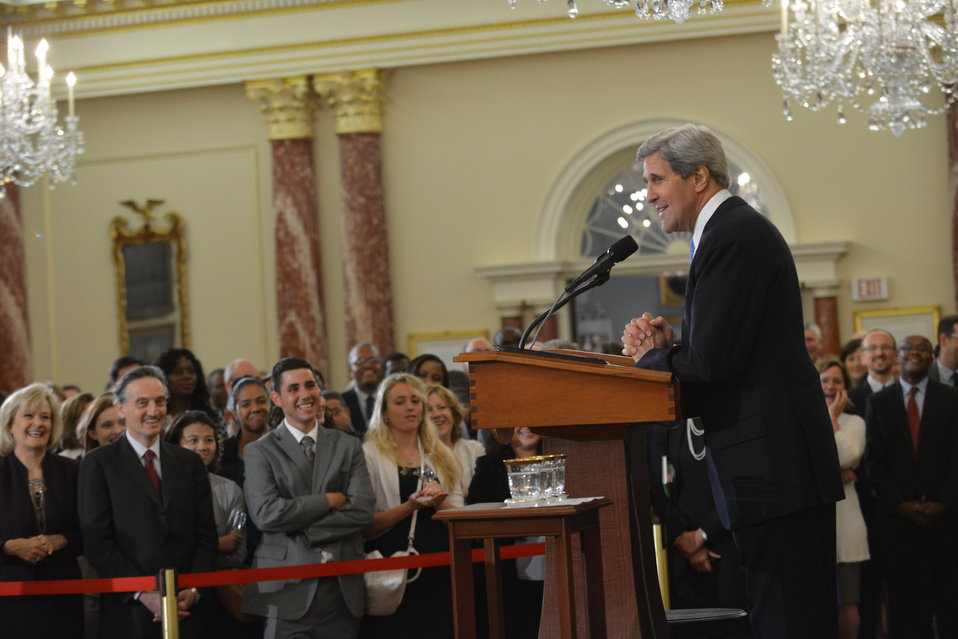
Secretary Kerry Delivers Remarks at the World Food Prize Laureate Announcement Ceremony

U.S. Secretary of State John Kerry delivers remarks at the World Food Prize Laureate Announcement Ceremony at the U.S. Department of State in Washington, D.C., on June 19, 2013.